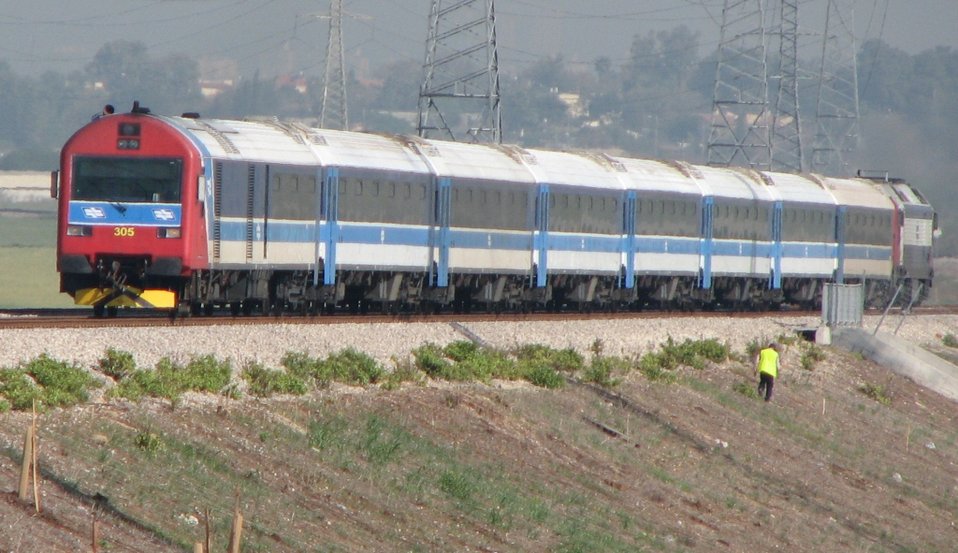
עברית: קרונות מודו חד קומתיים מתוצרת אלסטום